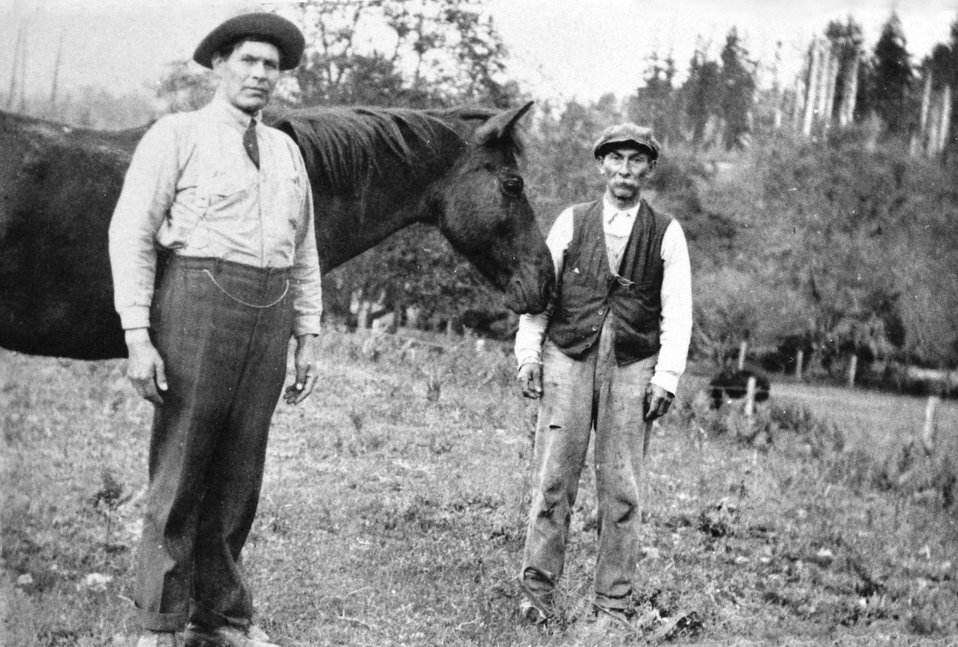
Tom Billings left and Jake Fry.